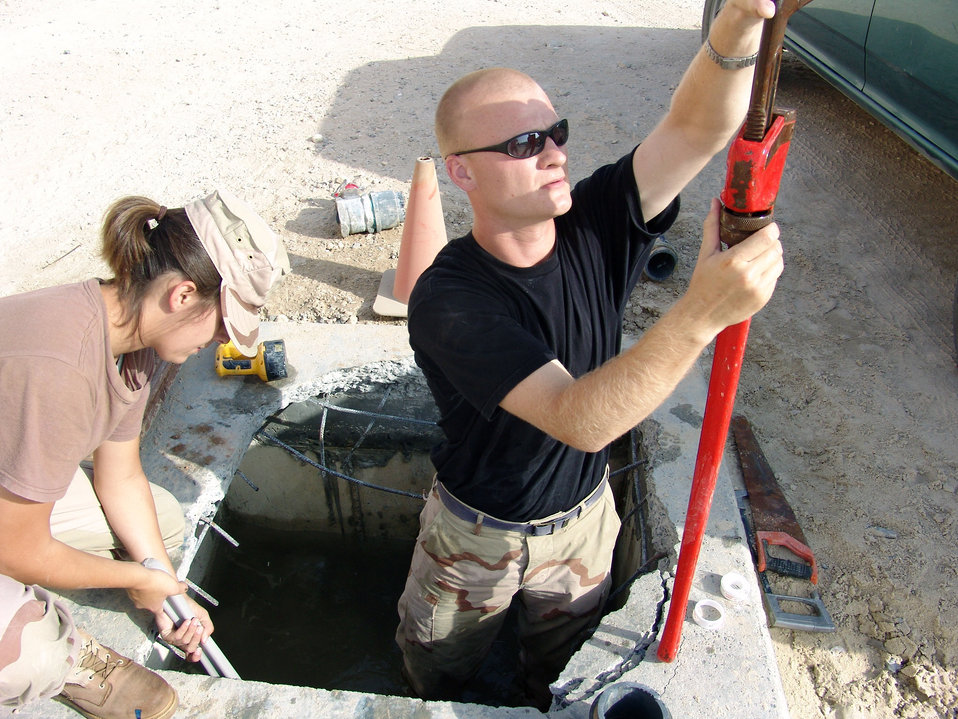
Busted

SOUTHWEST ASIA -- Airman Amber Aucoin (left) keeps pressure on the pipes while Senior Airman Michael Gutshall adjusts a wrench. Both Airmen are assigned to the 386th Expeditionary Civil Engineer Squadron's utility shop and were repairing a busted water main at a forward-deployed location.